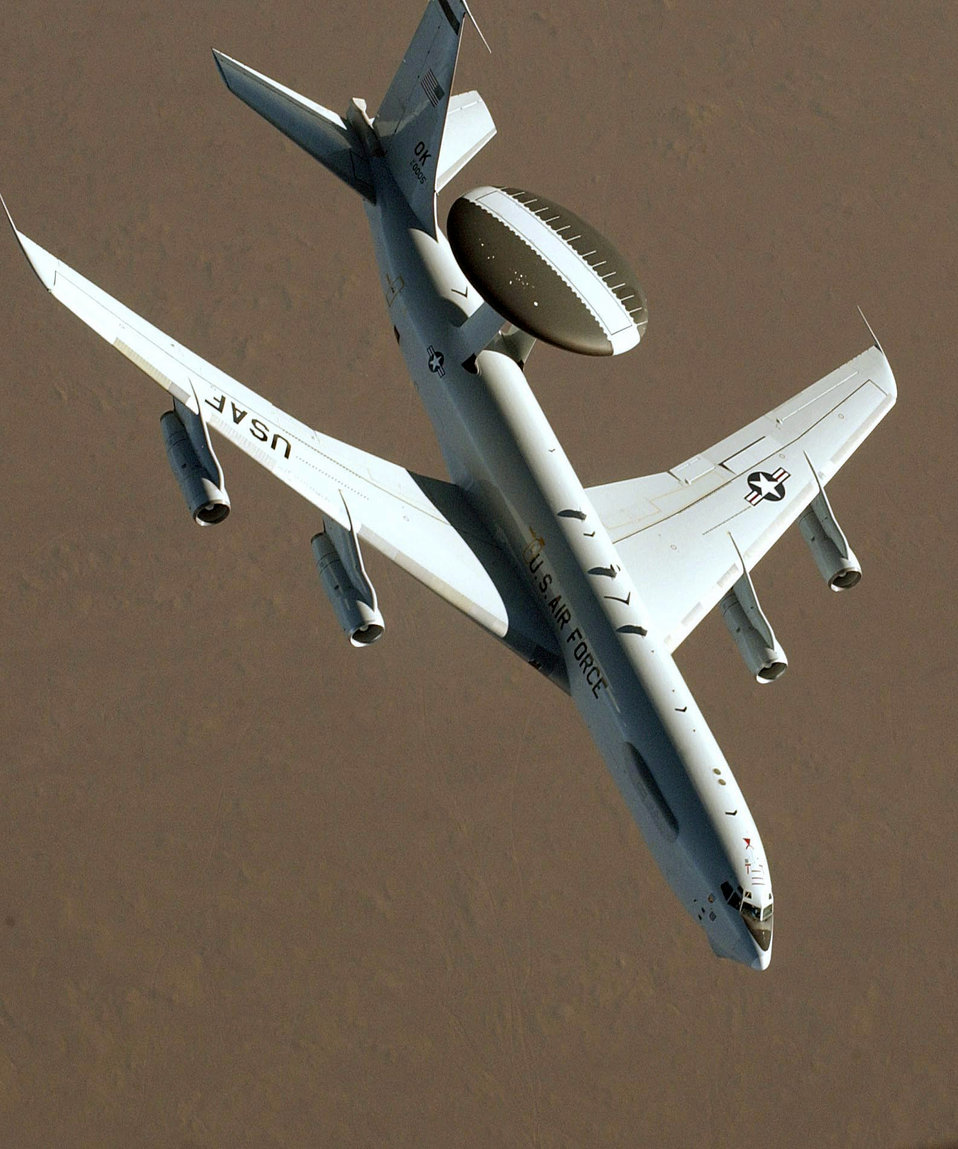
AWACS banking

OPERATION IRAQI FREEDOM -- An E-3A AWACS participating in Operation Iraqi Freedom banks after refueling from a KC-10 Extender near Iraq on March 22, 2003. About 15 percent of the total sorties flown during the operation have been air refueling missions. Aerial refueling capability allows coalition aircraft to fly long distances in the theater quickly and return safely.